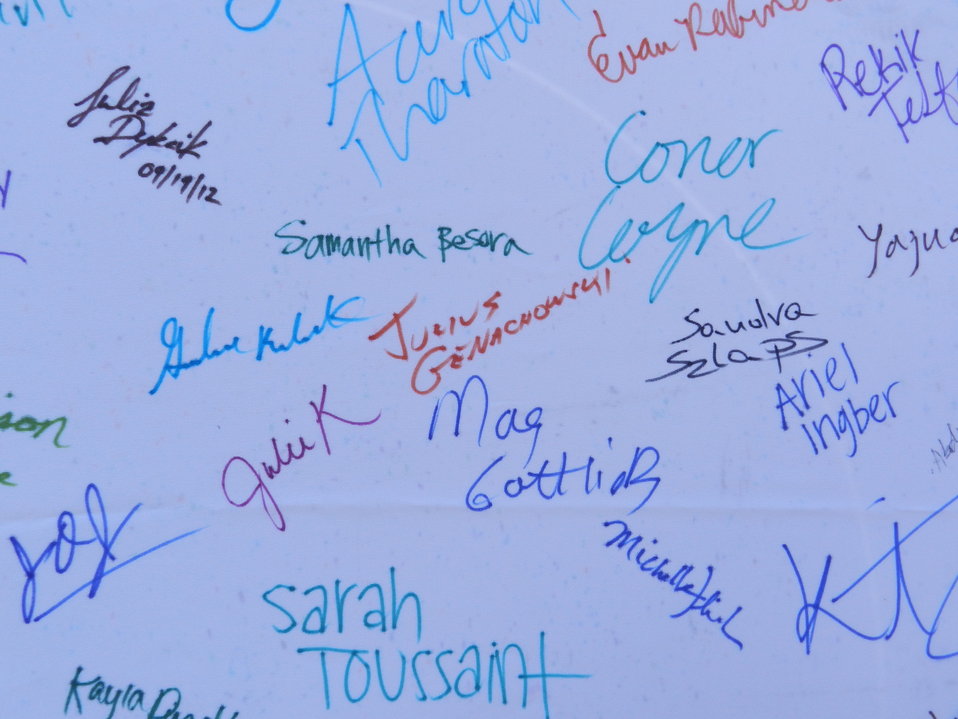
It Can Wait Pledge Day 9.19.12

Signatures on the Pledge board at the ‘No Text On Board’ Pledge Day Event, The George Washington University, Washington, D.C. September 19, 2012